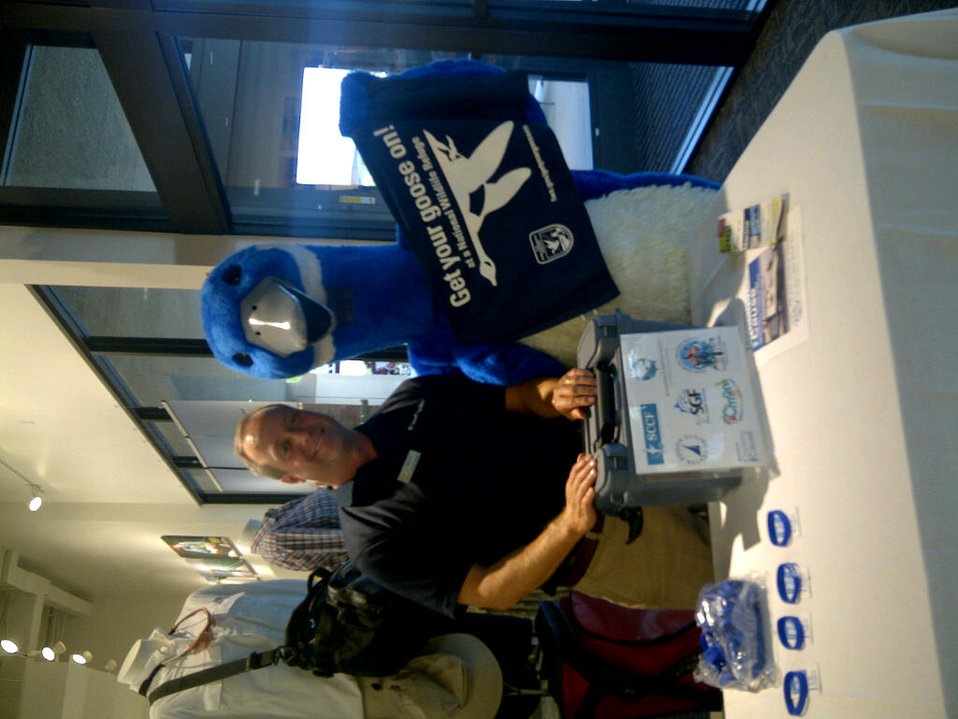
Get Your Goose On!